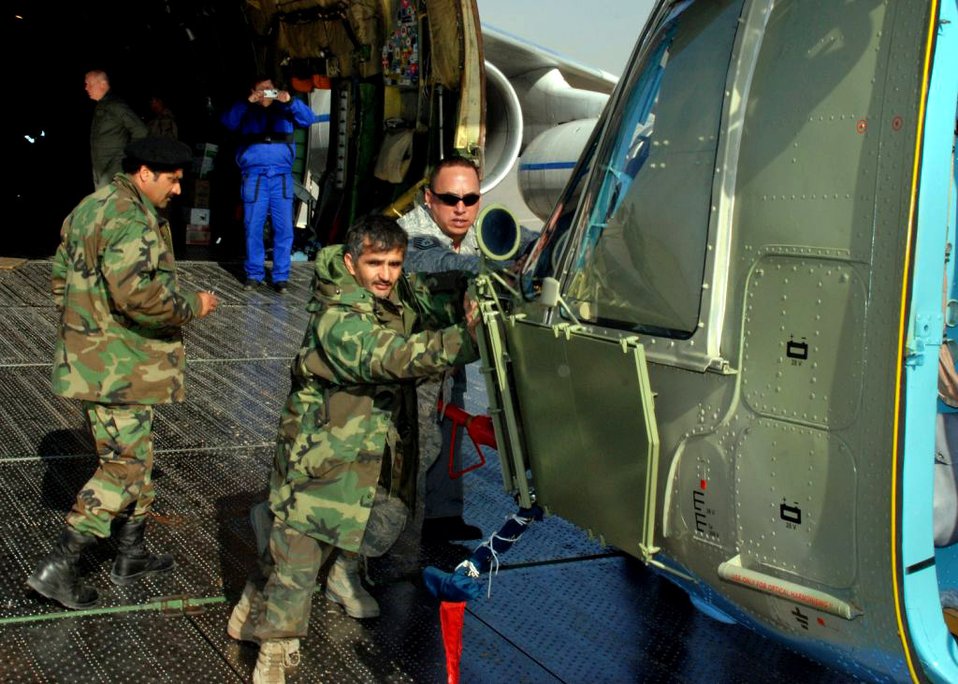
Airmen help deliver helicopters to Afghan military

Tech Sgt. John Noa helps an Afghan national army air corps soldier unload a refurbished MI-17 helicopter from an Antonov 124 cargo plane Dec. 5 at Kabul, Afghanistan. The helicopter was being delivered to the Afghan national army air corps from the Czech Republic.